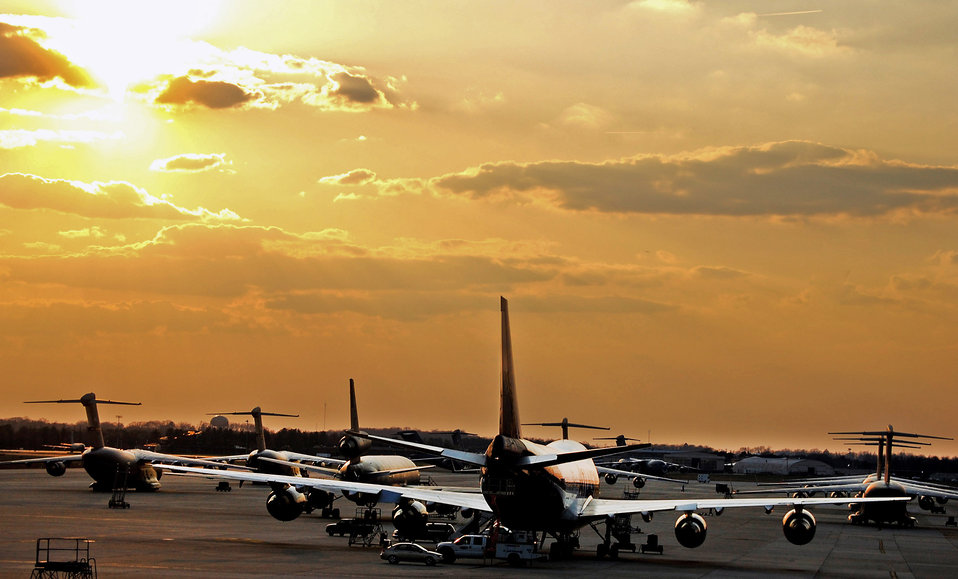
Golden rays on the flightline

Aircraft are shadowed by the sun on the flightline April 9 at McGuire Air Force Base, N.J. McGuire's aircraft, which include the KC-10 Extender and the C-17 Globemaster III, help the Air Force carry out its mission.